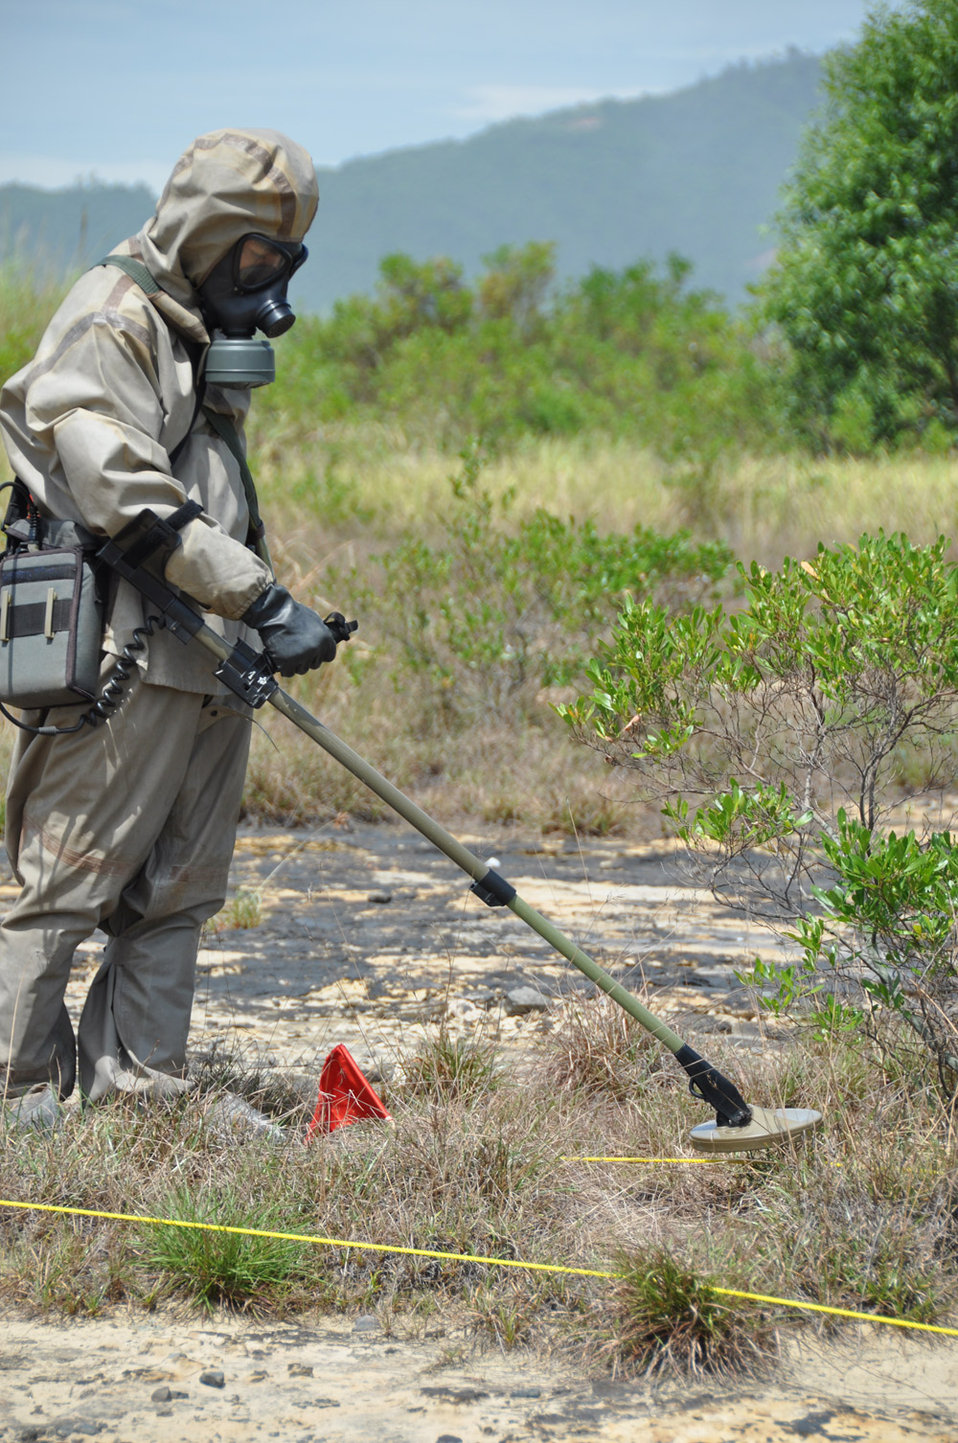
A Vietnamese soldier demonstrates UXO detection and clearance in Danang. June 17, 2011